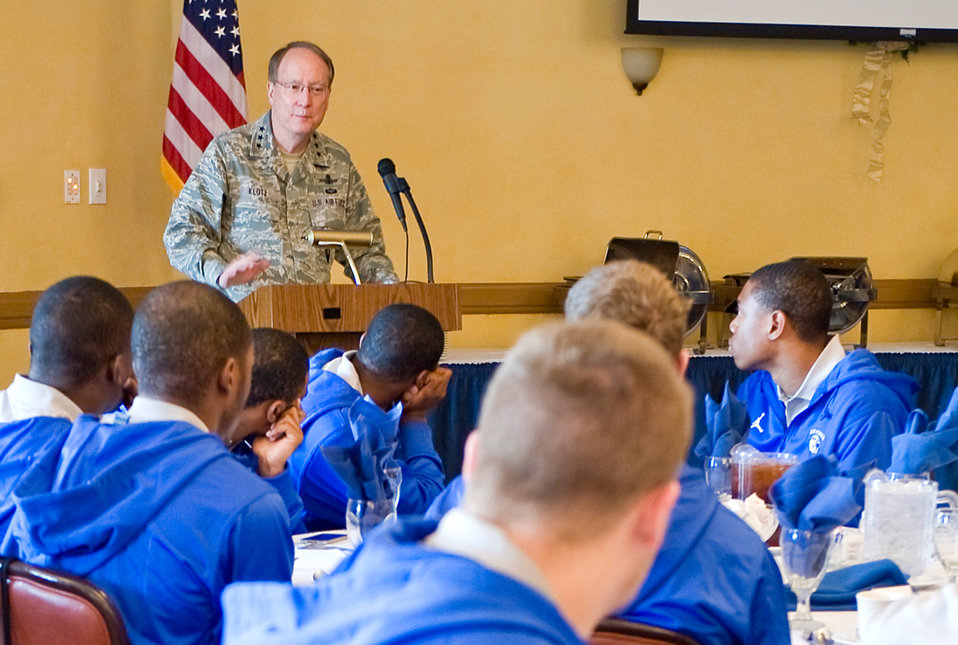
Falcons coach fires up home crowd

Lt. Gen. Frank G. Klotz speaks to members of the U.S. Air Force Academy football team and guests from Barksdale Air Force Base, La., during a lunch Dec. 23, 2010, on Barksdale AFB. General Klotz is the Air Force Global Strike Command commander and a 1973 distinguished graduate of the U.S. Air Force Academy. The team is in town for the Independence Bowl Dec. 27, 2010, where the Falcons will face the Georgia Tech Yellow Jackets.